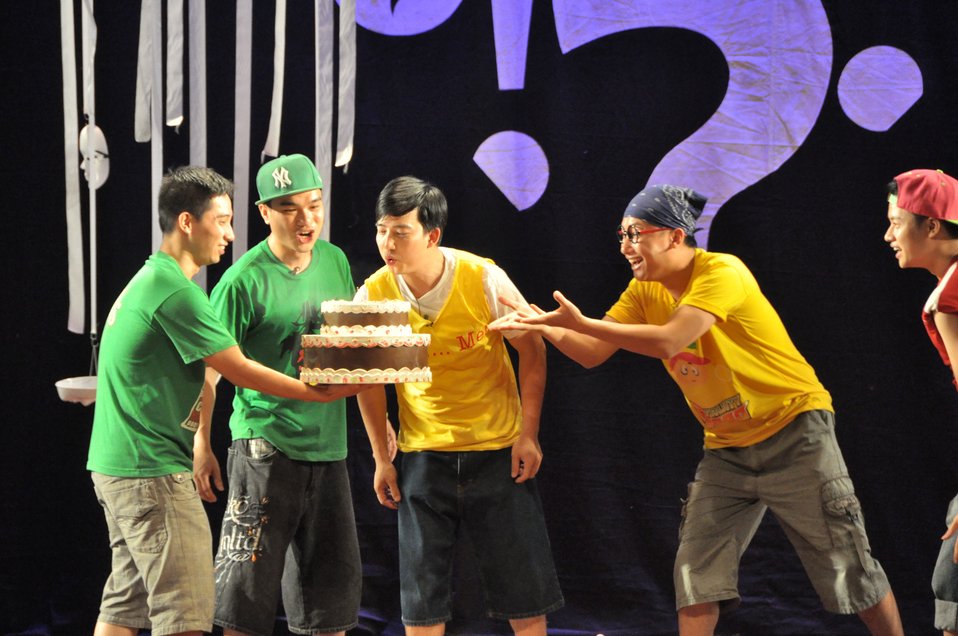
PEPFAR Musical Questions and Exclamations

Hanoi, May 17, 2013